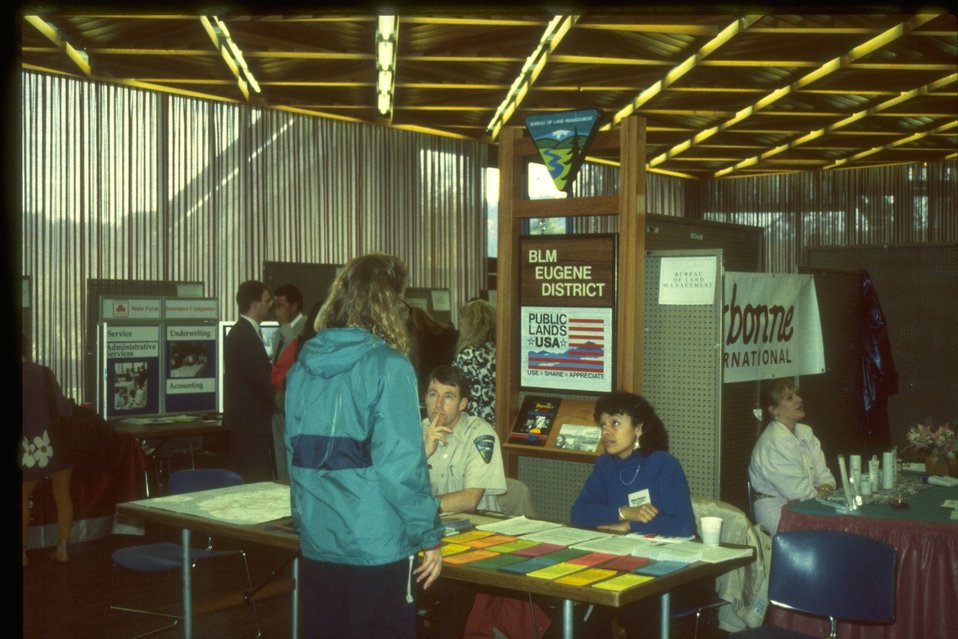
Job Recruitment Fair.